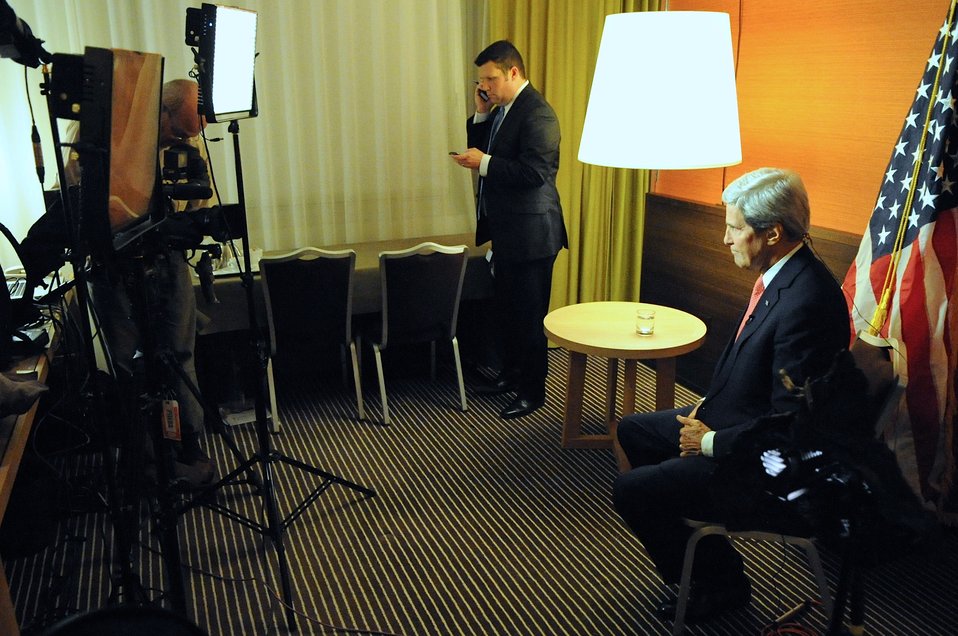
Secretary Kerry Prepares for Interviews in Geneva, Switzerland

U.S. Secretary of State John Kerry sits in a hotel room in Geneva, Switzerland, about 6:00 a.m. on November 24, 2013, as he prepares to tape three Sunday news-show appearances after the P5 1 member nations concluded negotiations with Iran about its nuclear capabilities.